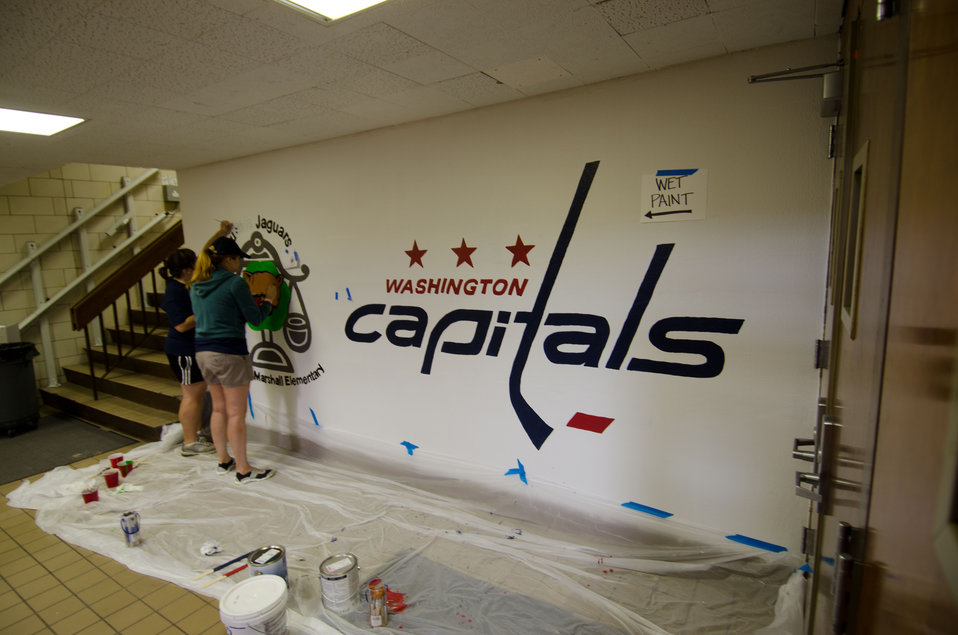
U.S. Department of Agriculture (USDA) People’s Garden Executive Master Gardeners, friends, and family, along with Washington Capitals fans are volunteering in District of Columbia Public Schools’ (DCPS) Beautification Day, on Saturday, August 25, 2012, at Thurgood Marshall Elementary School, in Washington, D.C. Each year people are invited to help “spruce up” public school facilities in preparation for the first day of school. More than 70 volunteers pitched in at this large school facility. The People’s Garden effort involves building and painting raised planter boxes, then preparing the soil mixture so they are “ready to grow.” Additionally, a team that includes descendants of U.S. Supreme Court Justice Thurgood Marshall assembles a prefabricated garden toolshed. The Justice’s son, John Marshall leads the team, which includes Brianna the Justice’s great-grand daughter in one of many multi-generational efforts at this school today. Washington Capitals Forward Mike Riberio, his family and mascot Slapshot participated in every project underway at Marshall School. From the outside gardens, to inside mural painting, and robotics worktable construction, the teams made their goals.